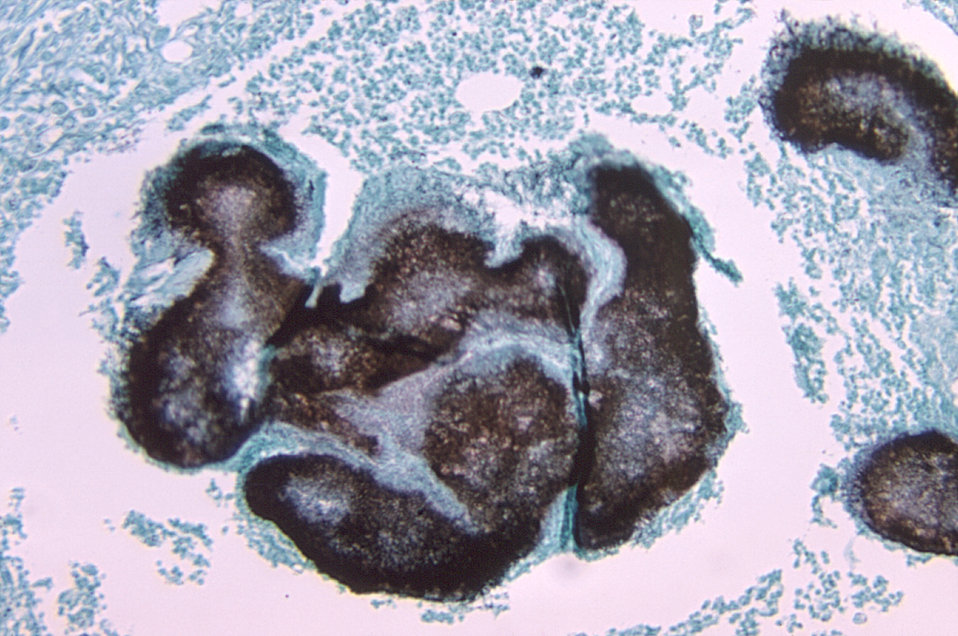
Magnified 160X, this Gamori-stained photomicrograph revealed the presence of a number of chronic inflammatory granules due to an unidentified pathogen, found in a sample of a canine tissue specimen in a case of actinomycosis.